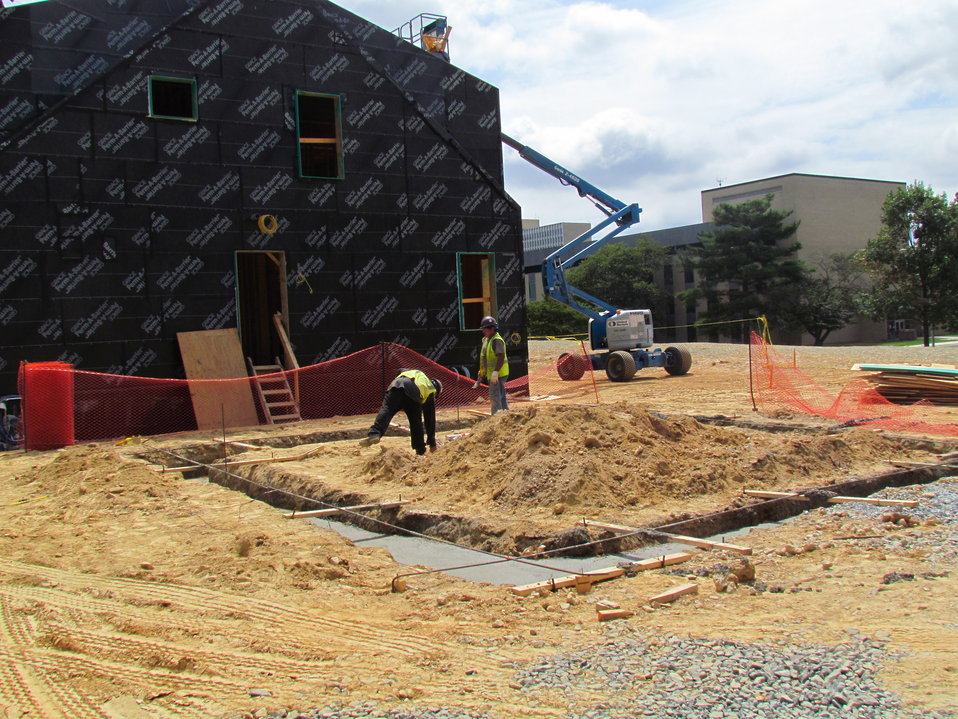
Net-Zero Energy Residential Test Facility - Workmen finishing foundation for detached two car garage.